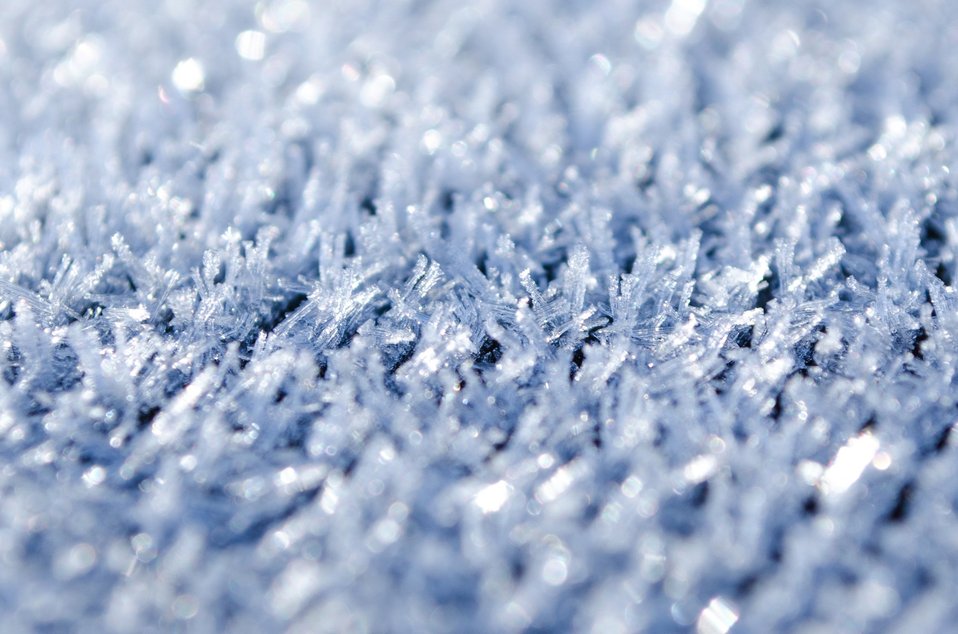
Winter frost.